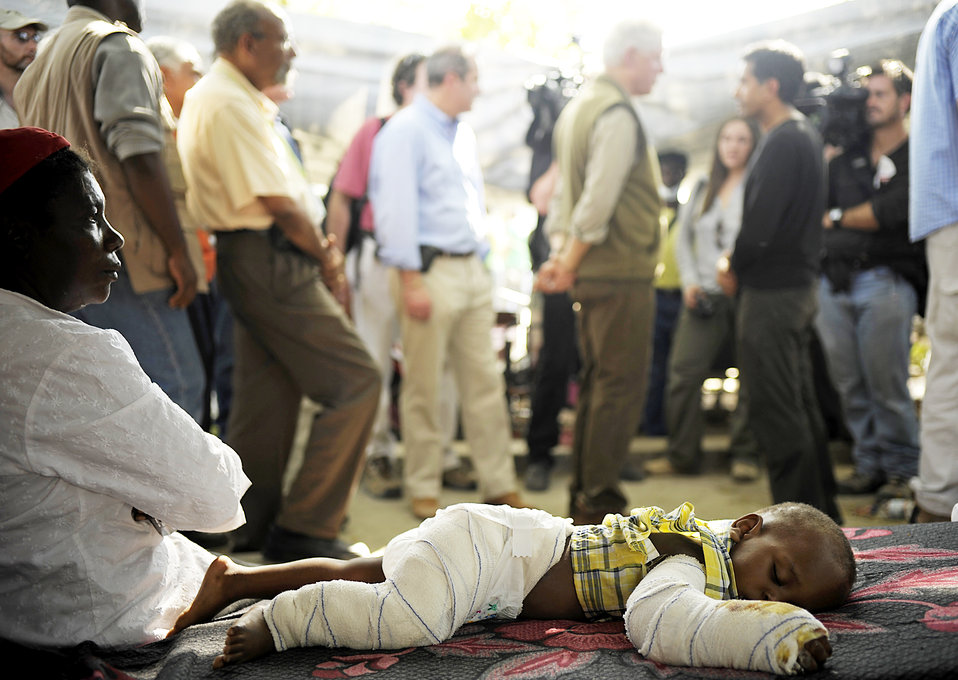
Relief efforts in Haiti

A young child rests where she can as former U.S. President Bill Clinton is interviewed during his visit to a hospital in Port-au-Prince, Haiti, Jan. 18, 2010. As the U.S envoy to Haiti, President Clinton surveyed the damage caused by the earthquake Jan. 12, 2010.